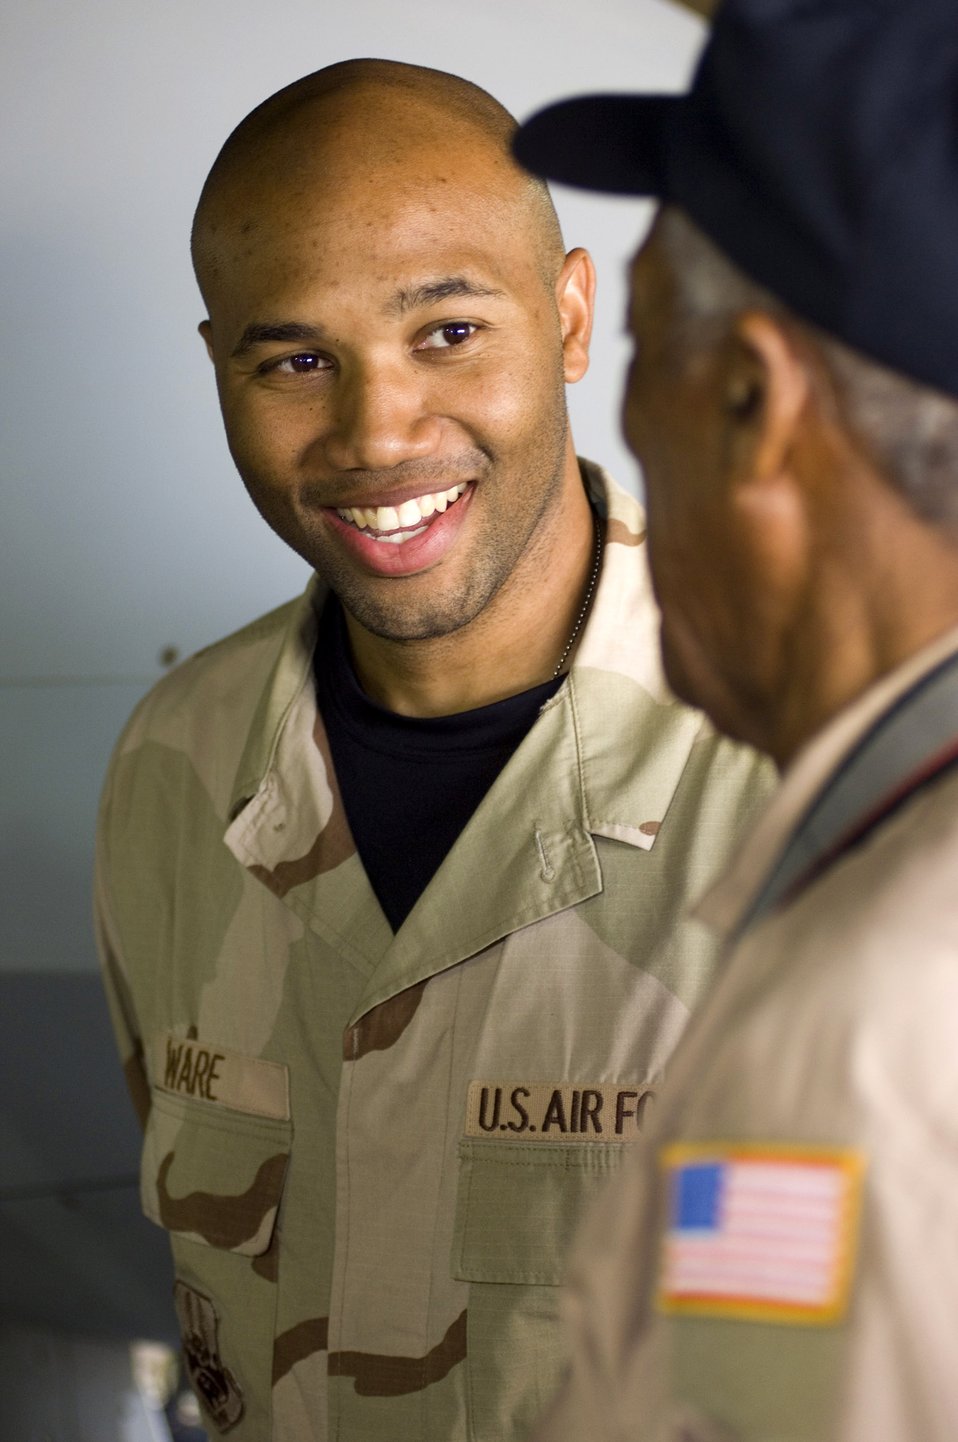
Tuskegee Airmen return to warzone

BALAD AIR BASE, Iraq (AFPN) -- Staff Sgt. Avery Ware talks to a Tuskegee Airman. The Tuskegee Airmen are here to meet deployed 332nd Expeditionary Operations Group Airmen and observe operations. The Army created the Tuskegee Airmen unit in 1941.